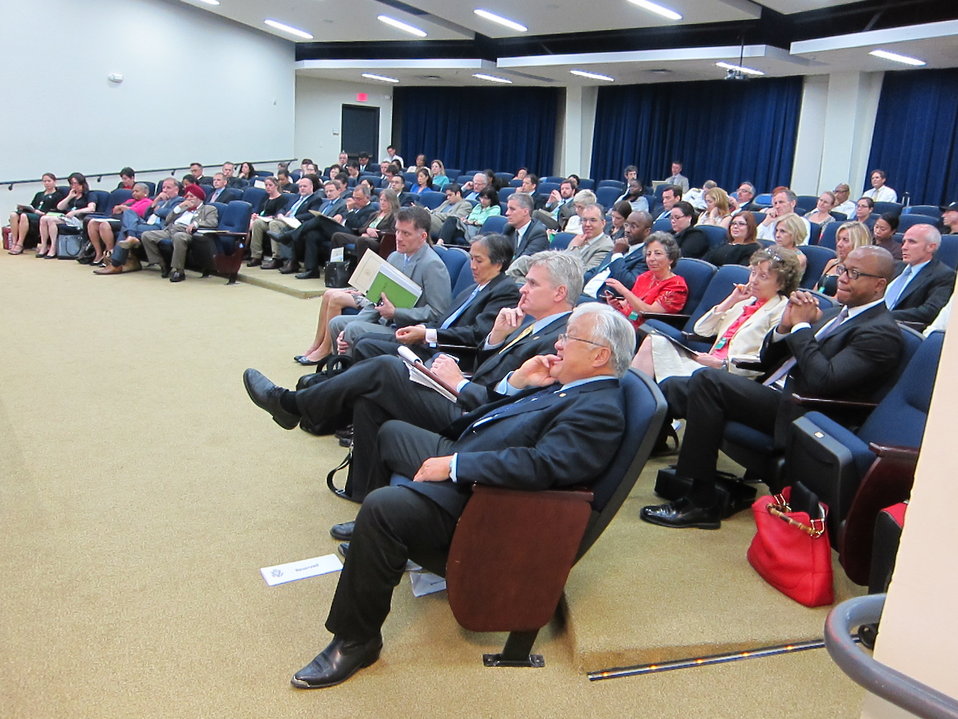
WH 2012 World Hepatitis Day Event